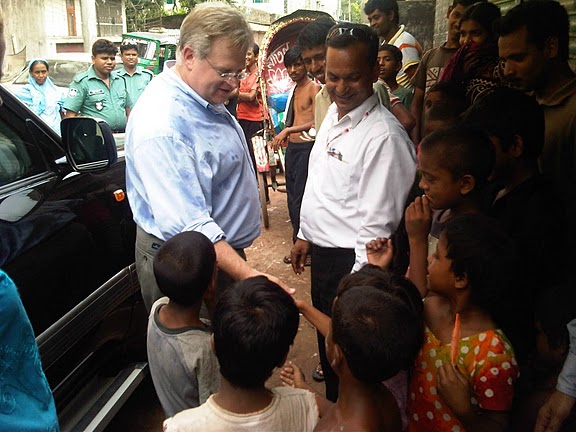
Assistant Secretary Schwartz Is Greeted By Children in Geneva Camp

Assistant Secretary of State for Population, Refugees and Migration Eric Schwartz is greeted by children in Geneva camp in Dhaka, Bangladesh, on June 7, 2011.